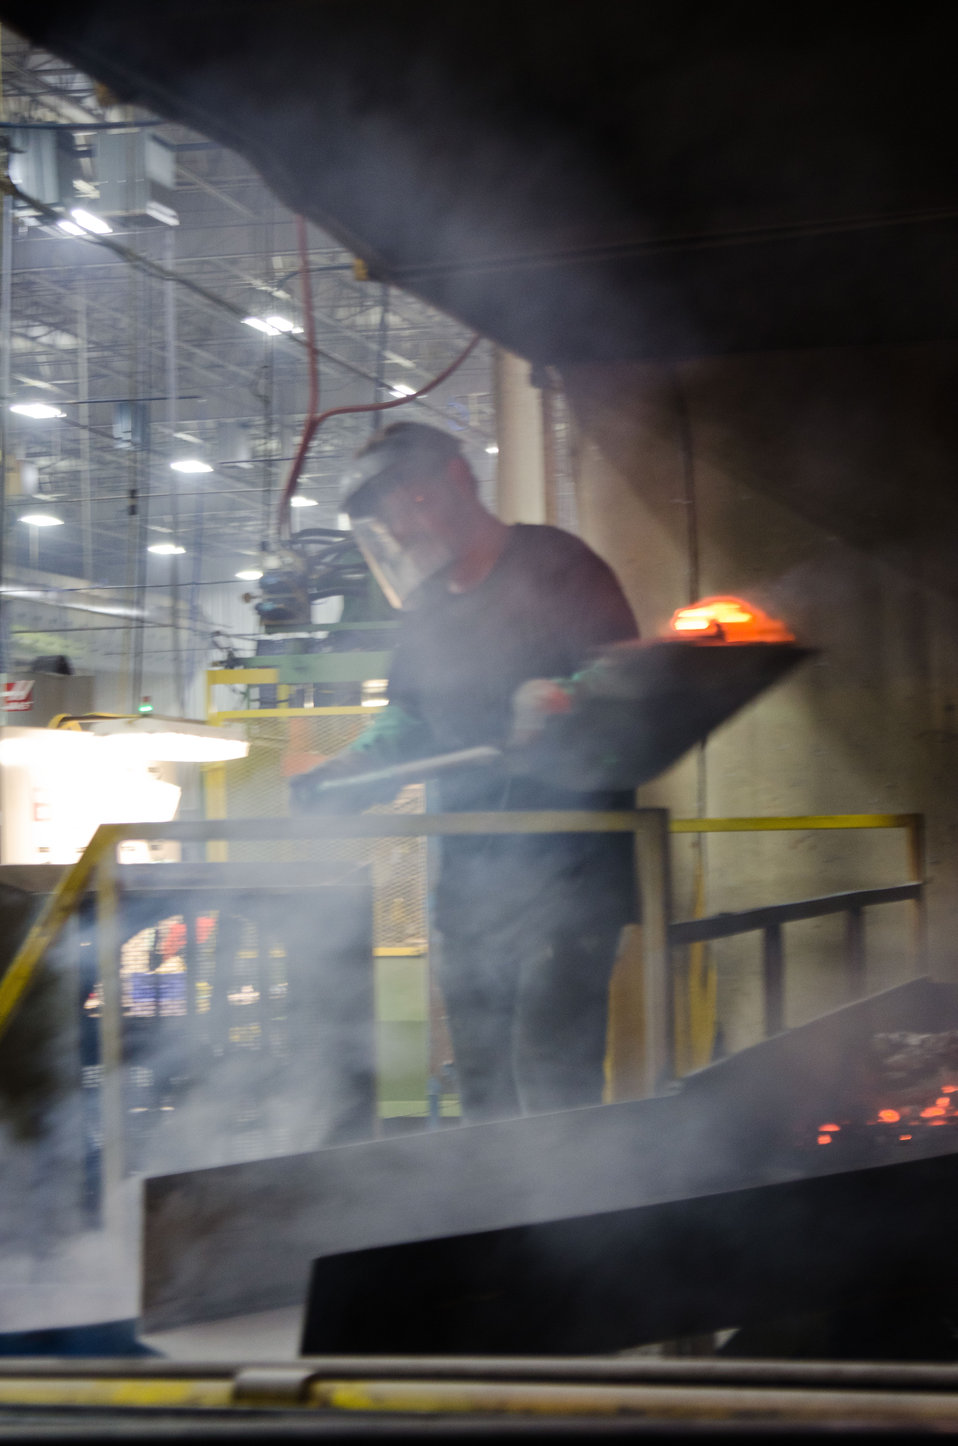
Melter operator Carl Welborn faces flames and intense heat to forklift foundry ingots into; and shovels slag out of a furnace crucible at Port City Group’s Port City Castings Corporation, manufacturer of high-pressure aluminum die-castings, mostly for the automotive industry, in Muskegon, MI, facility on Wednesday July 20, 2011. Port City Group boosted its employment by 12 percent over last year thanks to two Rural Business Guaranteed Loans totaling $9.6 million. In its 80,000 sq. ft. facility, machines that range from 800 – 1,600 tons, and cast A380 aluminum alloy products from melted ingots of aluminum, into automotive components of U.S.A. made vehicles. The process features a variety of robotic presses; computer controlled machining; quality control facility; and complete measurement and testing laboratory. In 2009 banks were backing out of loans for PCG equipment purchase agreements. The U.S. Department of Agriculture (USDA) loan guarantee helped make the loan possible with its guarantee. PCG obtained the needed robotic and other equipment. This resulted in a stable workforce that has since grown. When asked about their USDA experience, Port City Group Sales Manager Laura LaGuire said, “It was great! They were very helpful. Everything that came up was handled smoothly, the money came in place when it was needed, and it was a very smooth transition.”